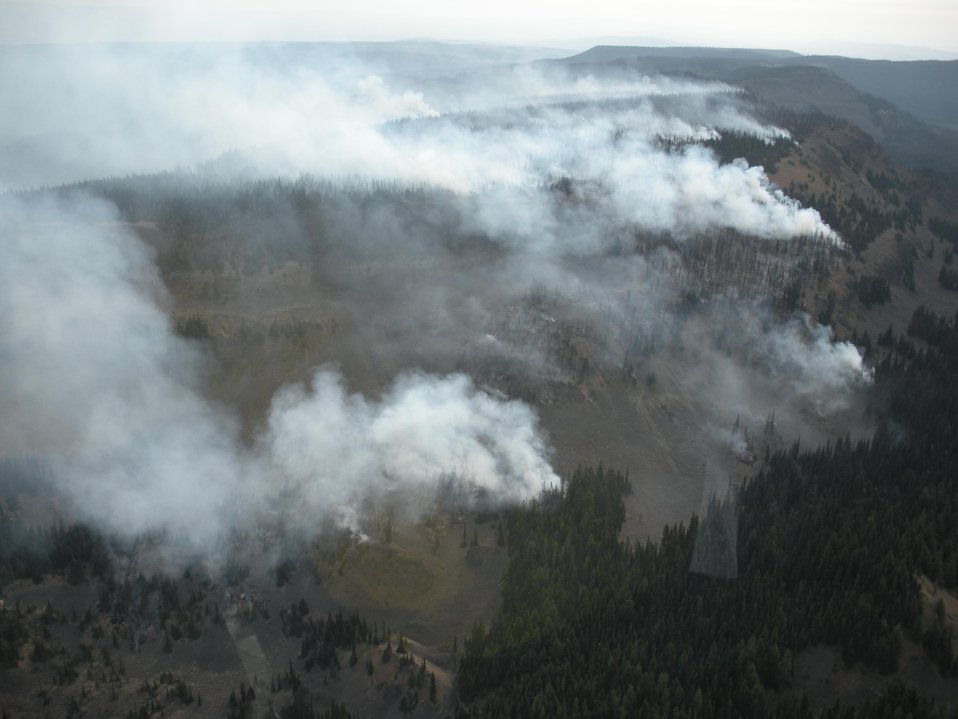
The Manastash Ridge Fire in the Wenatchee National Forest near in Cle Elum, WA began on Aug. 9, 2013 began by lightning has consumed approximately 2,352 acres and is 40% contained.